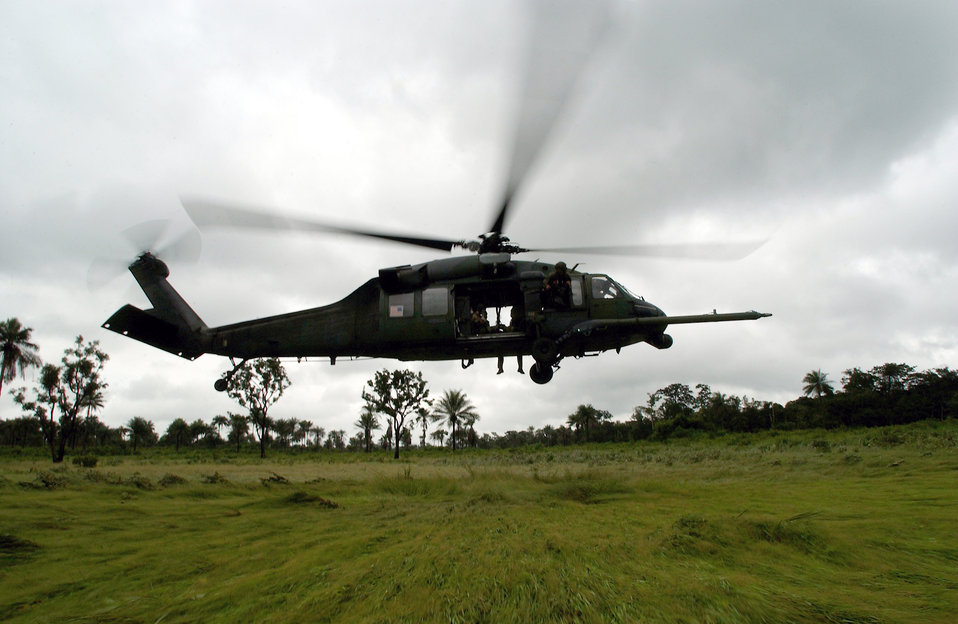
Mission complete

OVER SIERRA LEONE (AFPN) -- An HH-60G Pave Hawk prepares to land during a training mission Aug. 10. The helicopter is assigned to the 56th Rescue Squadron from Naval Air Station Keflavik, Iceland, and is currently serving with the 398th Air Expeditionary Group. The group is providing personnel recovery and emergency evacuation capability for the Humanitarian Assistance Survey Team and the Fleet Antiterrorism Security Team in Liberia.